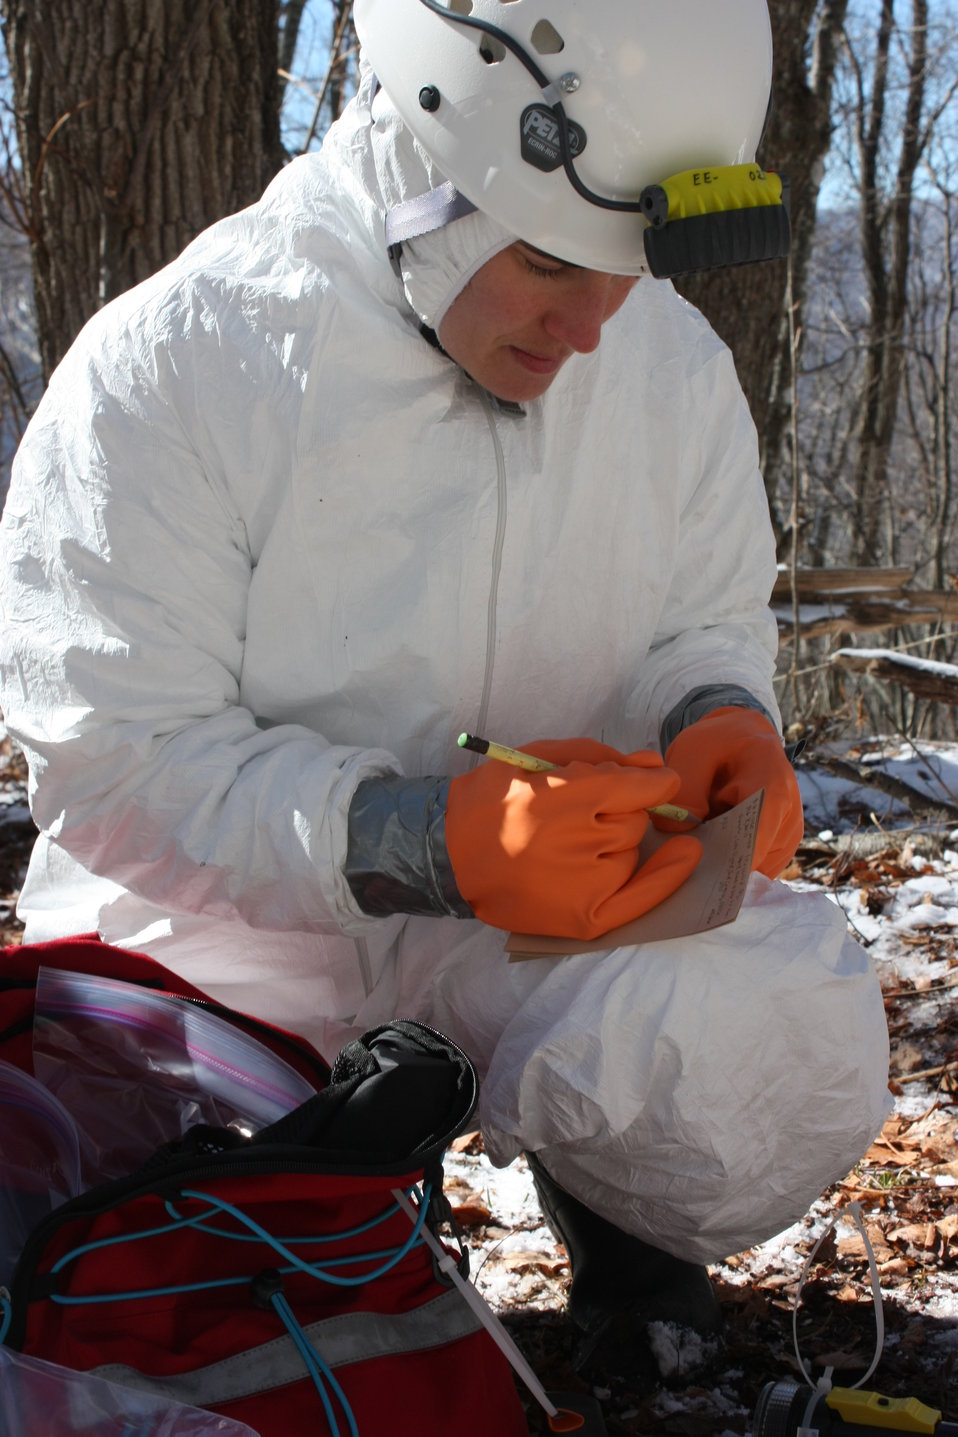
NCWRC biologist Gabrielle Graeter taking notes